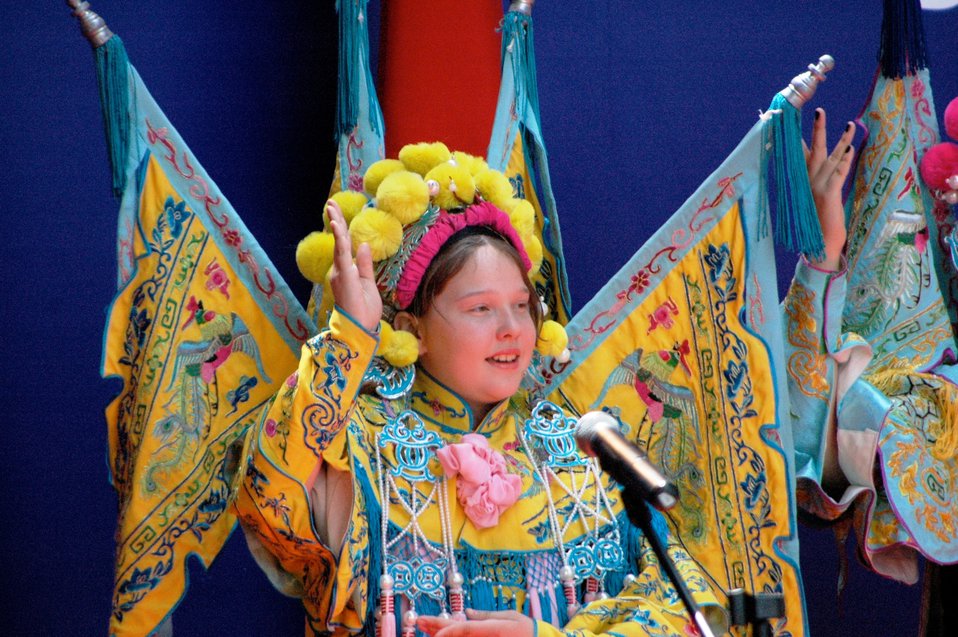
A Chinese Artist Performs at People-to-People Launch Ceremony

A Chinese artist in a traditional costume perform at the U.S.-China Consultation on People-to-People Exchange Dialogue Launch Ceremony at the National Center for the Performing Arts in Beijing, China, May 25, 2010.